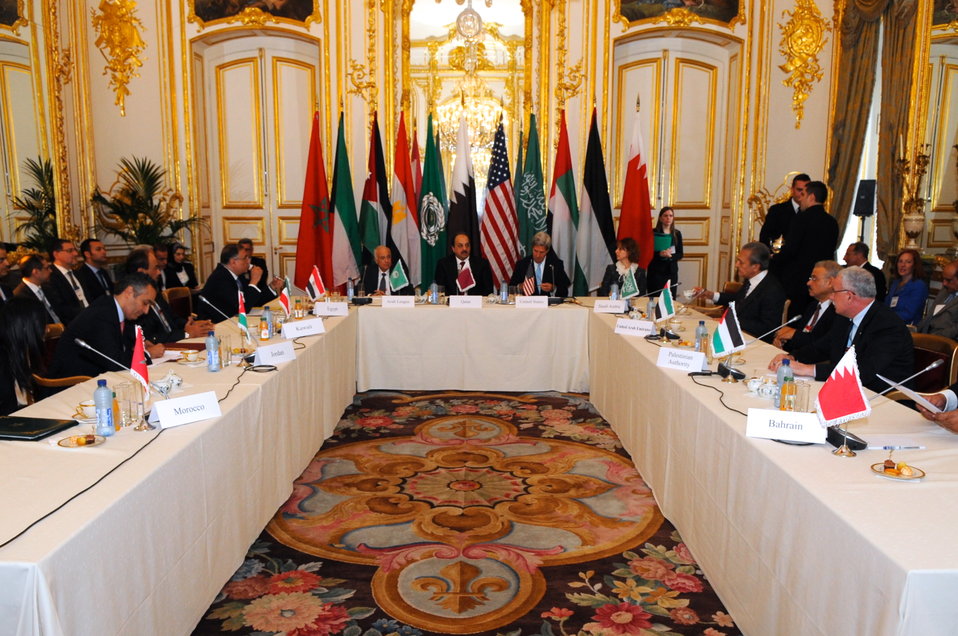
Secretary Kerry Hosts Arab Peace Initiative Meeting In Paris

U.S. Secretary of State John Kerry, flanked by Arab League Secretary-General Nabil Alaraby and Qatari Foreign Minister Khalid al-Attiyah, opens a meeting of the Arab Peace Initiative focused on Middle East peace in Paris on October 21, 2013.